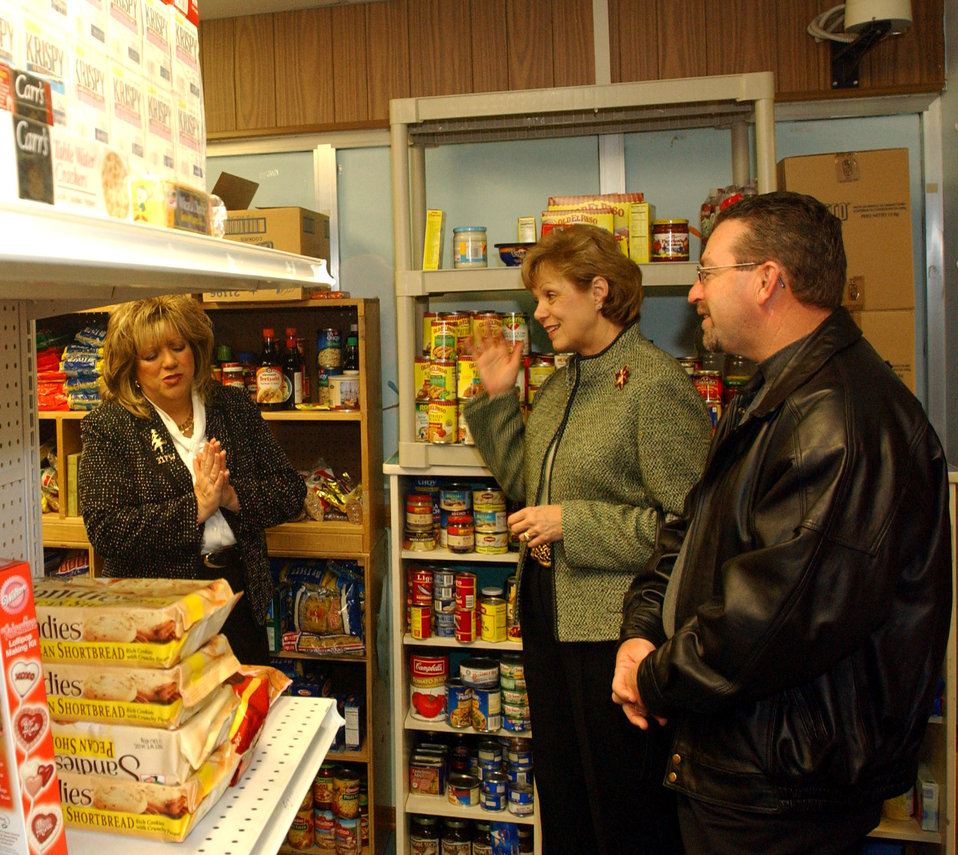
Caring for Airmen and their families

Barbara Yates and retired Command Chief Master Sergeant Mike Lane talk about the accomplishments of the Aviano Air Base Food Pantry to Barbara Wynne Dec. 5 at Aviano AB, Italy. Secretary of the Air Force Michael W. Wynne and his wife are visiting with Airmen to get an orientation of the 31st Fighter Wing. Secretary Wynne is responsible for the affairs of the Department of the Air Force, and ensures the Air Force can meet its current and future operational requirements. Mrs. Yates is the spouse of Brig. Gen. Robert Yates, the 31st Fighter Wing commander.